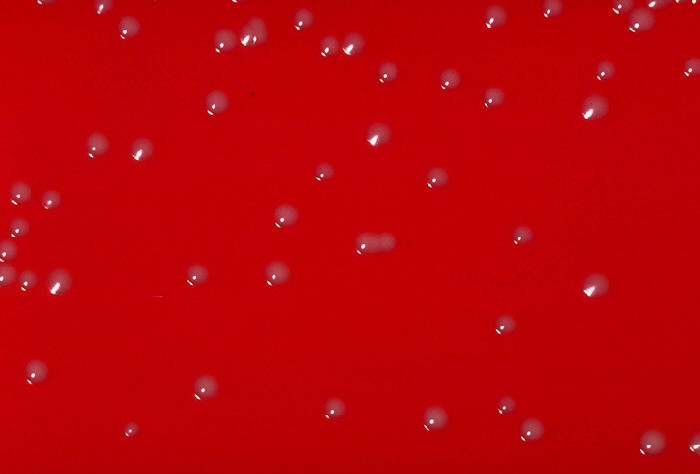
Blood agar plate culture of Corynebacterium striatum.